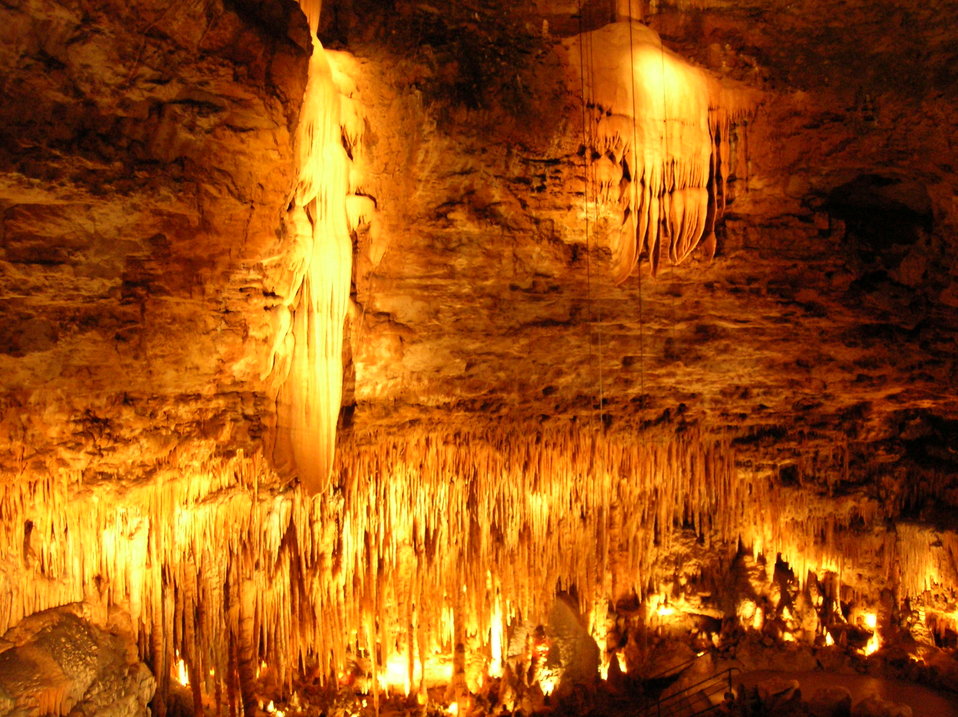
Concretions in the cave of Proumeyssac (P√©rigord, France). (NB:photo taken without flash in order to respect the place) Fran√ßais†: Concr√©tions dans le gouffre de Proumeyssac (P√©rigord, France). (NB:photo prise sans flash dans le but de respecter l'endroit)